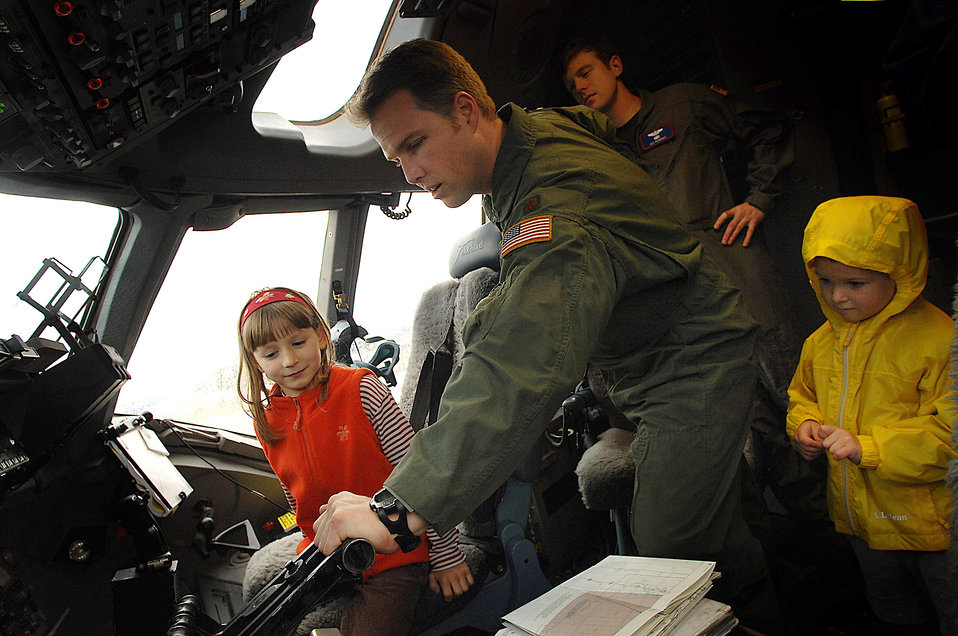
Deep Freeze Airmen warm New Zealand community's heart

Maj. Chuck Corrigan explains the controls of a C-17 Globemaster III to children April 17 in Christchurch, New Zealand. The C-17, flown by a Reserve and active-duty crew, is staging out of Christchurch for Operation Deep Freeze in support of the National Science Foundation's Antarctica research program. Airmen from the 446th Airlift Wing and 62nd Airlift Wing have flown missions for Operation Deep Freeze for the past six months and will end their flying season with one last mission April 18. Major Corrigan is a 446th Airlift Wing Reserve pilot from McChord Air Force Base, Wash.